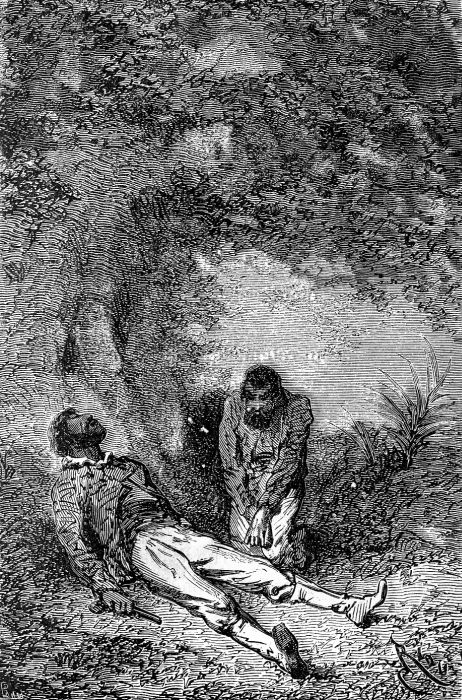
An ilustration from the novel 'In Search of the Castaways; or Captain Grant's Children' by Jules Verne drawn by Édouard Riou. Polski: Ilustracja powieści Juliusza Verne'a 'Dzieci kapitana Granta' autorstwa Édouarda Riou. Français : 'Les Enfants du capitaine Grant', Édouard Riou. Français : Mort de Burke.